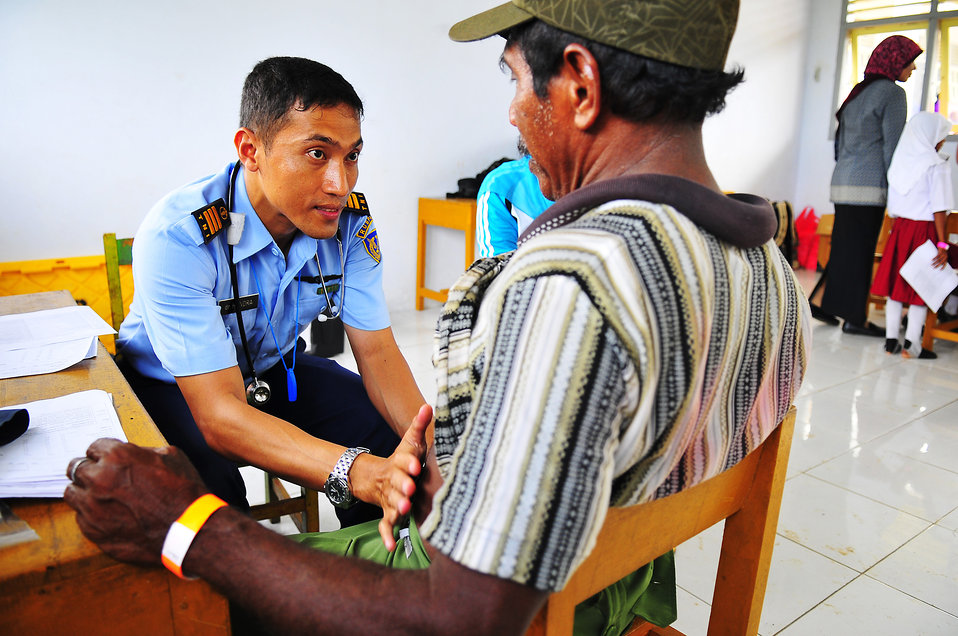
Dr. Hendra Samanta Examines a Local Indonesian Man

Dr. Hendra Samanta, general practitioner from Indonesia, examines a local Indonesian man during a medical civic action program organized by the Military Sealift Command hospital ship USNS Mercy (T-AH 19) on July 21, 2010, in Ternate, Indonesia. Mercy is deployed for Pacific Partnership 2010, the fifth in a series of annual U.S. Pacific Fleet endeavors conducted in Indonesia as a disaster relief exercise aimed at strengthening regional partnerships.